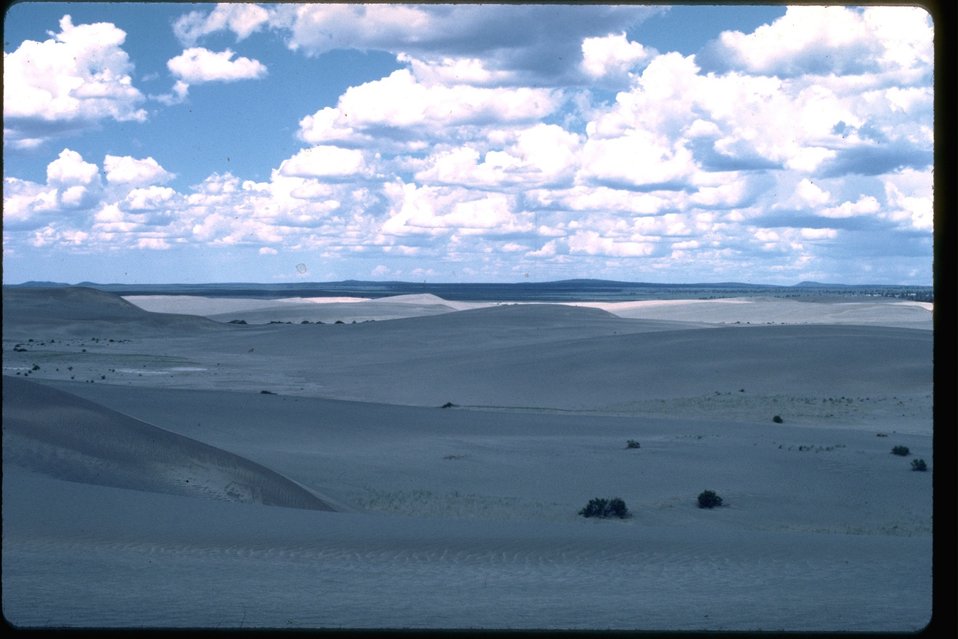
Sand Dunes Wilderness Study Area. OR 1-24